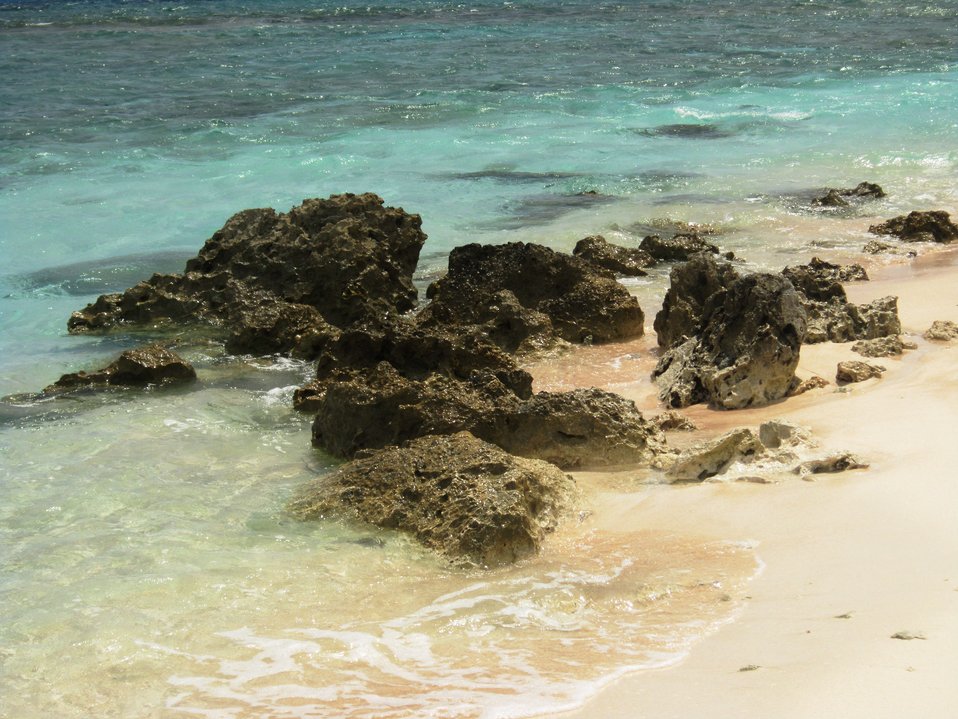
Camp Shutterbug 2011 prize winner

Guam National Wildlife Refuge, Pacific Islands
Photo: Beatrice Estrella, age 11
Second place, Scenery
Rock outcroppings at Ritidian Beach on the refuge.